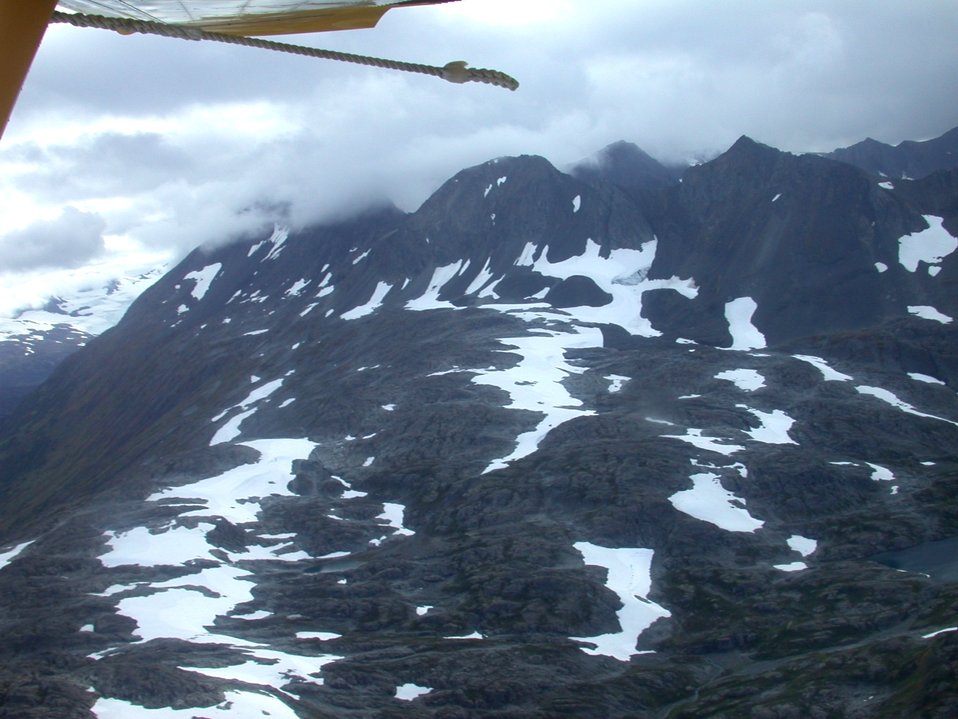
Float plane sightseeing along the Richardson Highway.